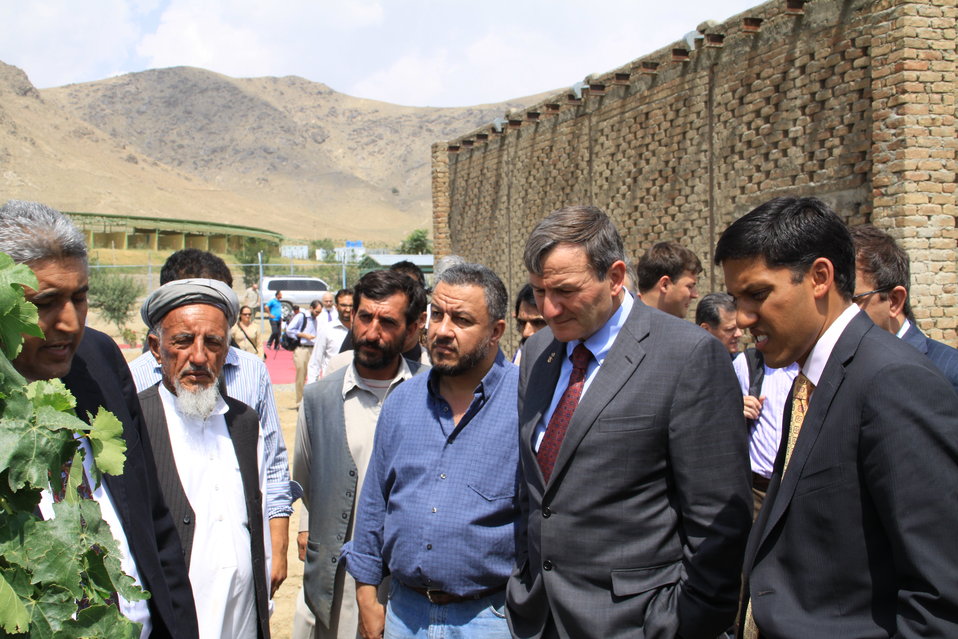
Badam Bagh Farm